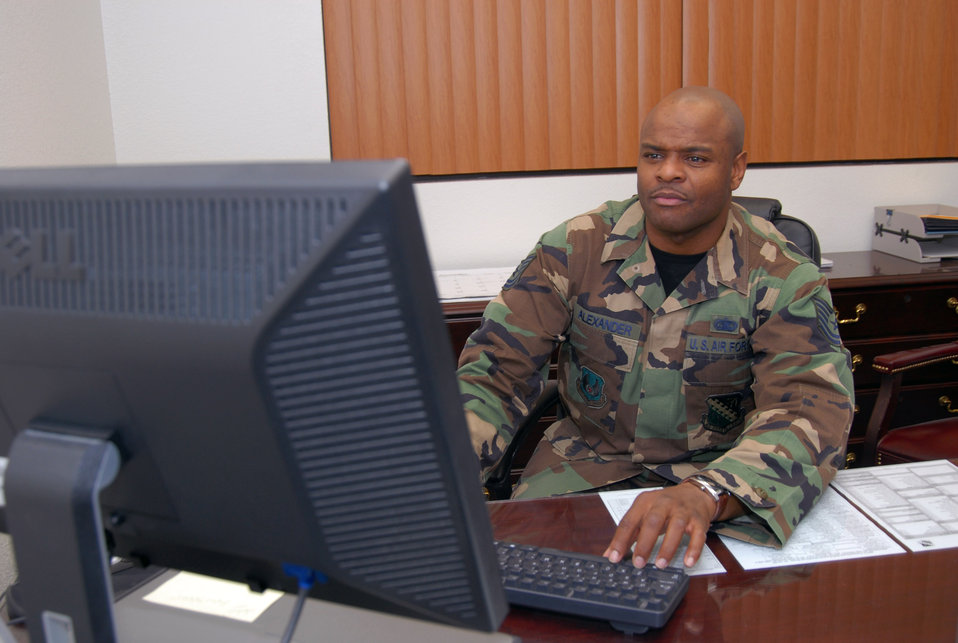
Edwards NCO uses training to help save accident victims

Tech. Sgt. Rondale Alexander rendered first aid to two victims after a Dec. 7 vehicle accident in Lancaster, Calif. He is the NCO in charge of Air Force Flight Test Center command section.